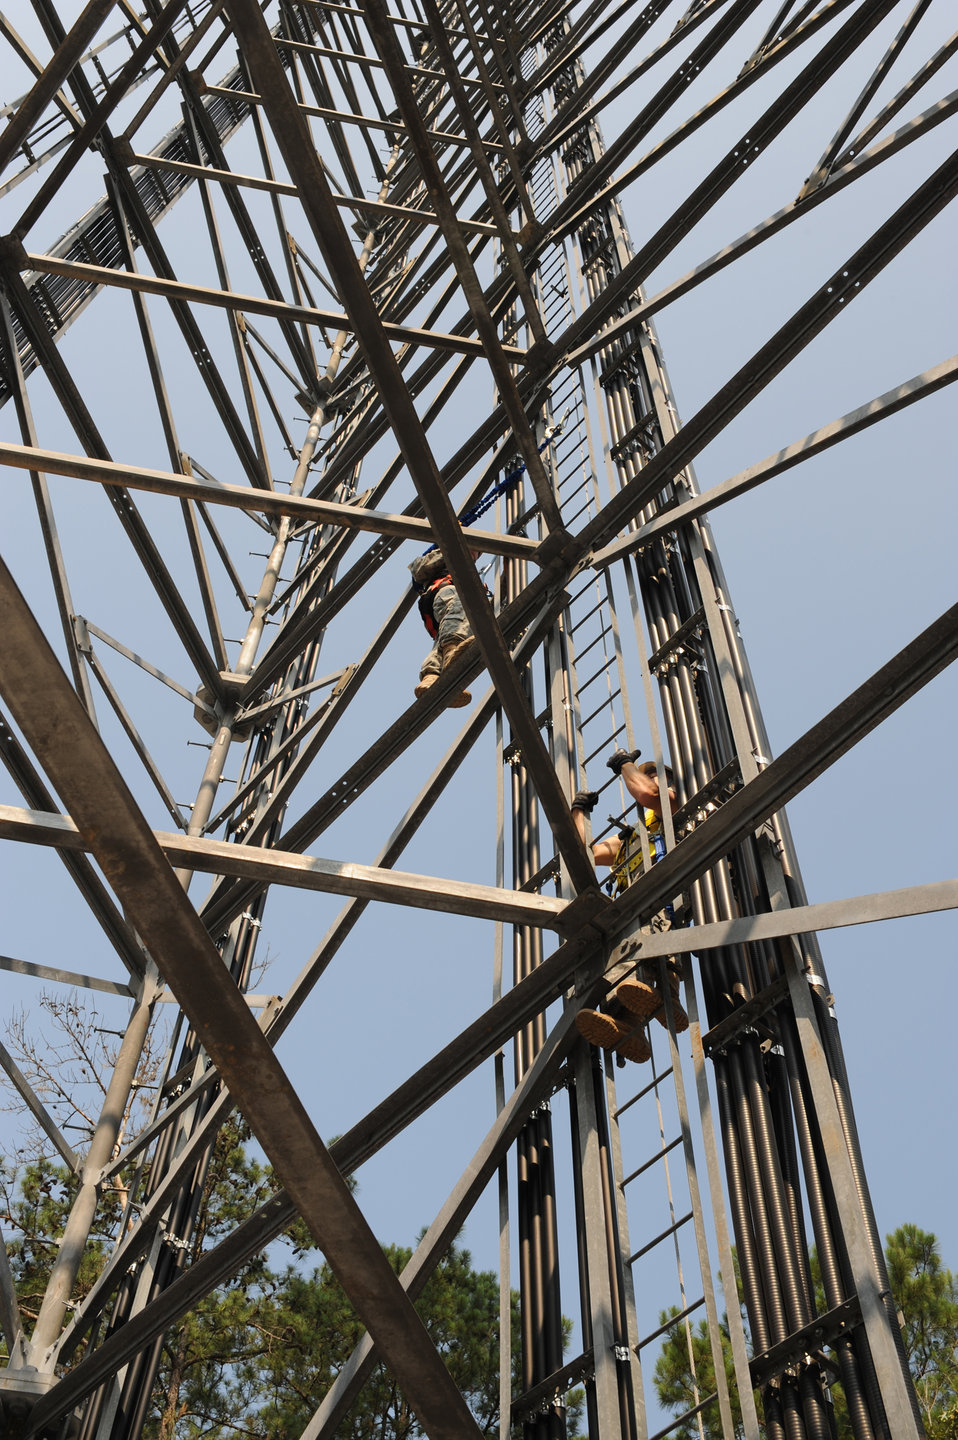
Airmen climb a radio tower

Senior Airman Matthew Baldyga and Staff Sgt. John Kingsley climb a radio frequency tower June 14, 2011, during a training exercise at Joint Base Charleston, S.C. Sergeant Kingsley is a radio frequency transmissions craftsman. Airman Baldyga is a radio frequency transmissions journeyman. Both are assigned to the 628th Communications Squadron.